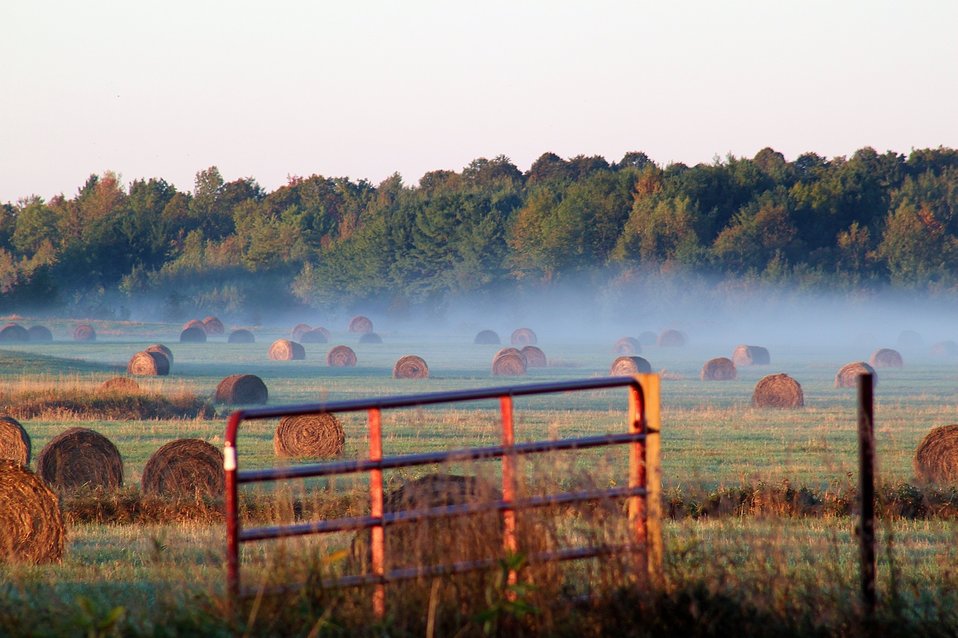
Foggy grasslands

Steam rises at Missisquoi National Wildlife Refuge.